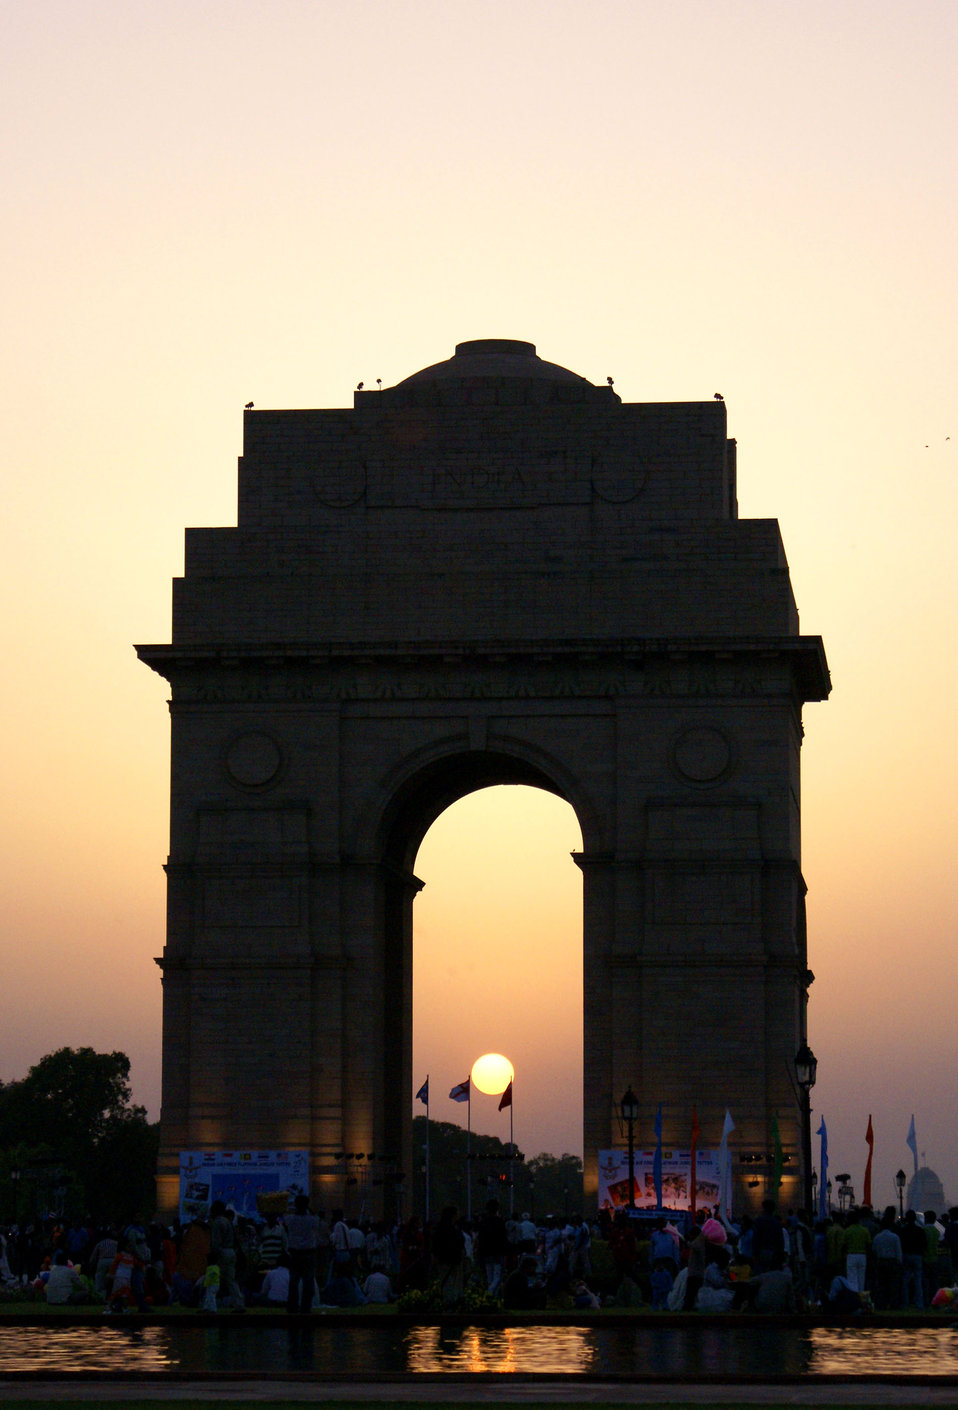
PACAF band entertains at Indian Air Force jubilee

The sun sets behind the India Gate in New Delhi March 17, setting the stage for the evening portion of the Indian Air Force Platinum Jubilee Tattoo. The Pacific Air Forces rock band Pacific Trends was invited to take part in the multinational celebration, which included military bands from India, Singapore, Sri Lanka and Thailand. The IAF celebrates its 75th birthday this year.